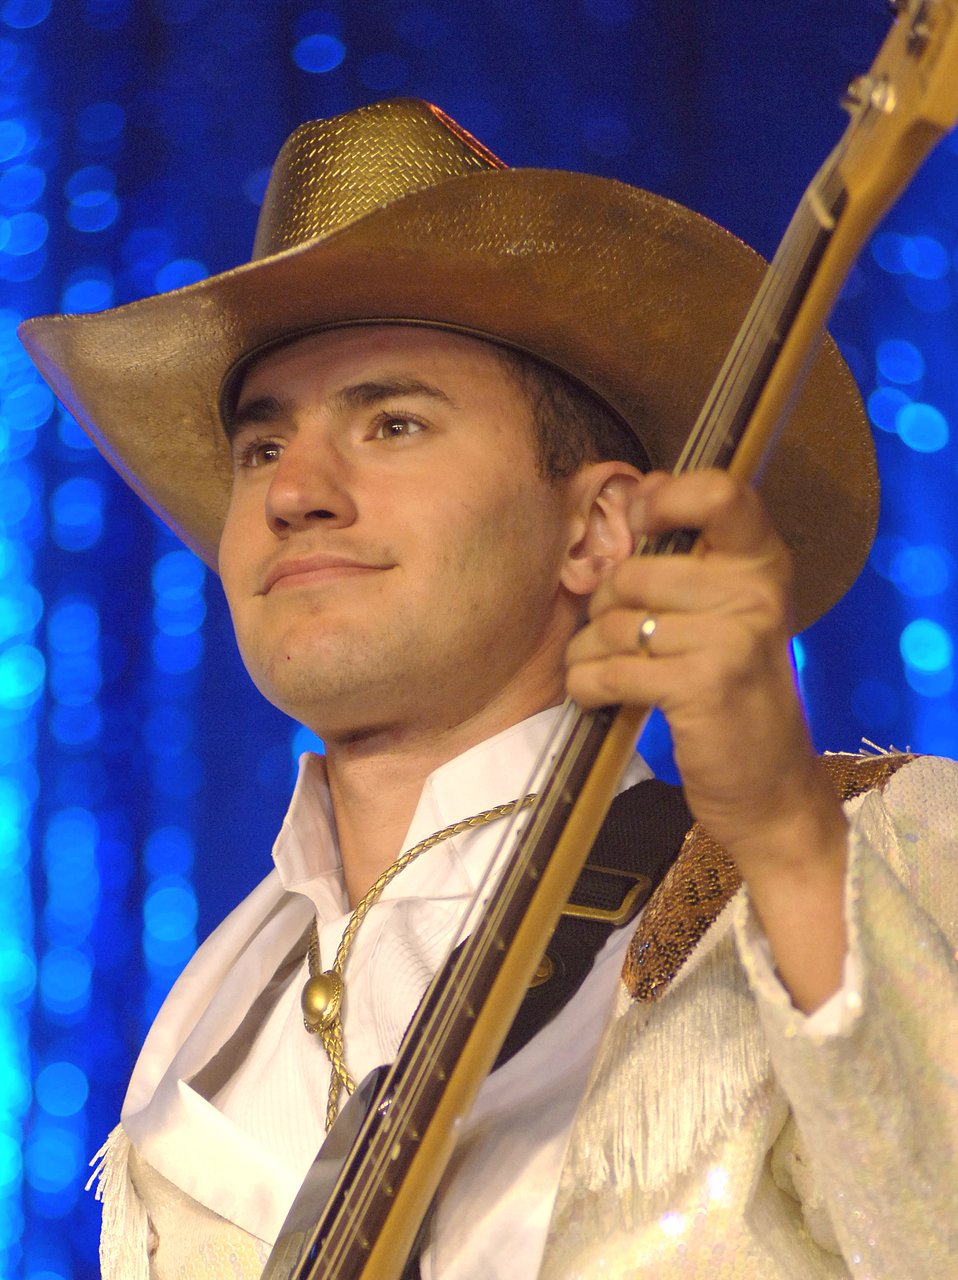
Tops in Blue brings sergeant home for an encore

Staff Sgt. Mark Schmidt performs a country music melody before his hometown crowd Aug. 18 in Old Orchard Beach, Maine. Sergeant Schmidt is the bass guitarist for Tops In Blue. He is a native of Old Orchard Beach, and performed before his family for the first time. Tops In Blues was in Maine as part of Air Force Week New England.